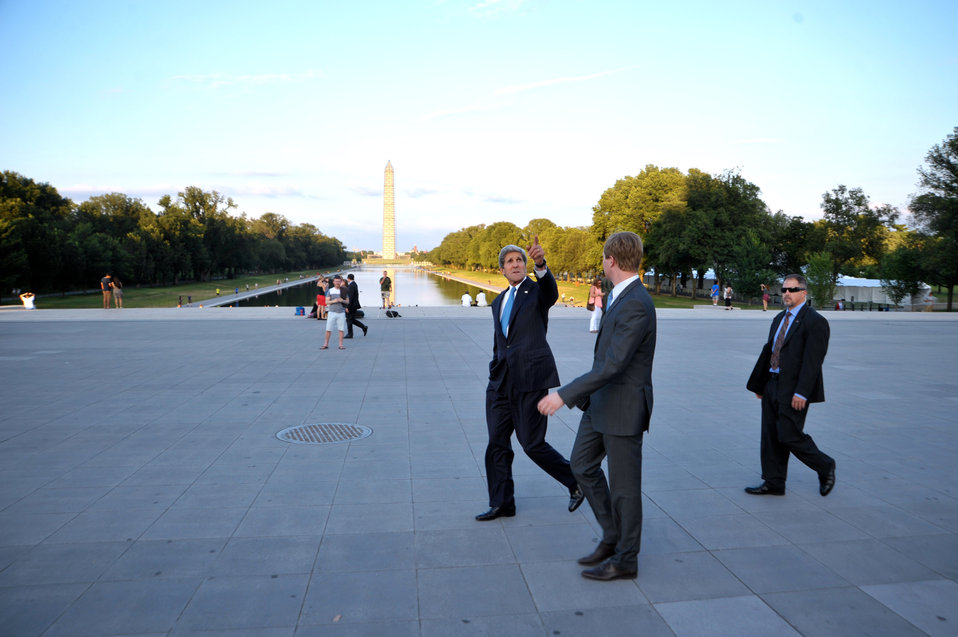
Secretary Kerry Points Out His Home State of Massachusetts as Inscribed on the Lincoln Memorial

U.S. Secretary of State John Kerry points out the name of his home state of Massachusetts as inscribed on the Lincoln Memorial during a twilight walk around the Lincoln Memorial in Washington, D.C., on July 24, 2013.